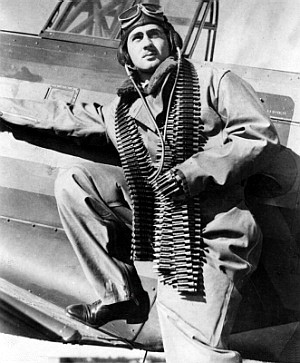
Flight Lieutenant William Ellis Newton VC of No. 22 Squadron RAAF beside his aircraft, with ammunition belt draped around his neck. He was awarded the Victoria Cross posthumously following his execution by being beheaded at Salamaua by the Japanese on 1943-03-29, after being shot down over Salamaua Isthmus, New Guinea.